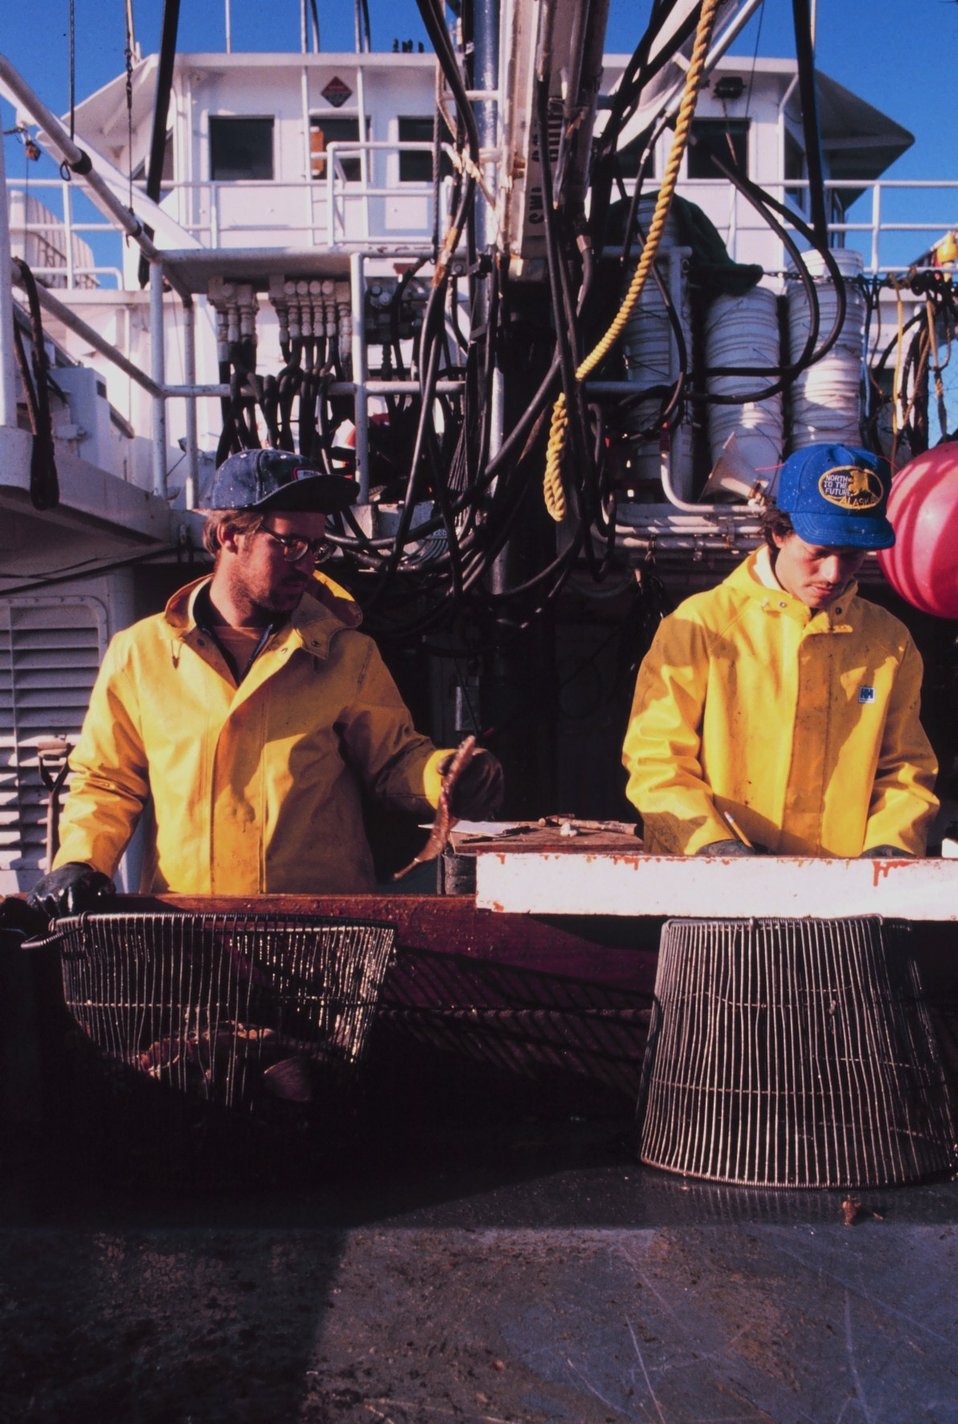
Sorting fish on the MILLER FREEMAN